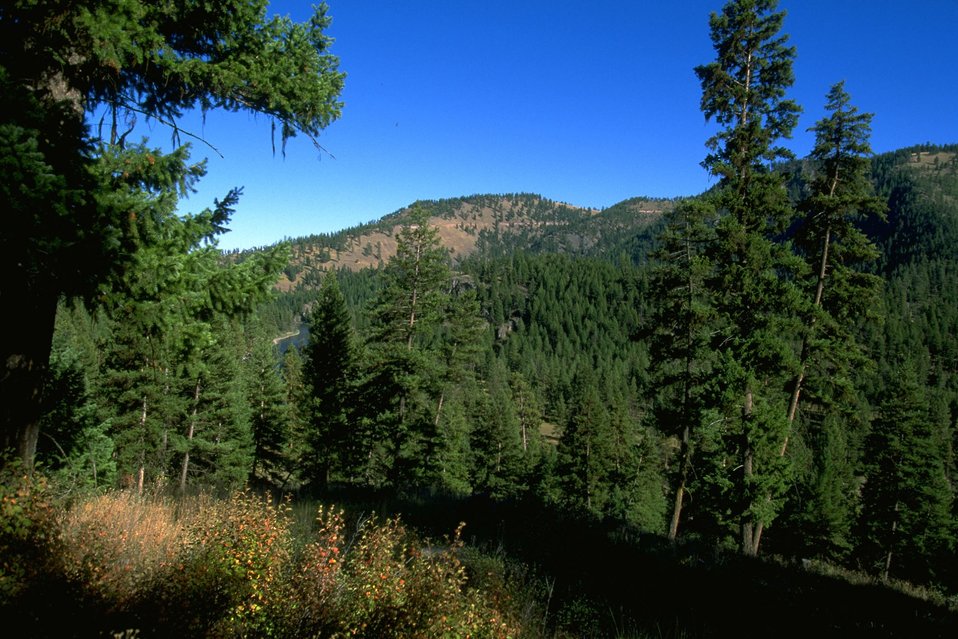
Forest view along the Blackfoot River